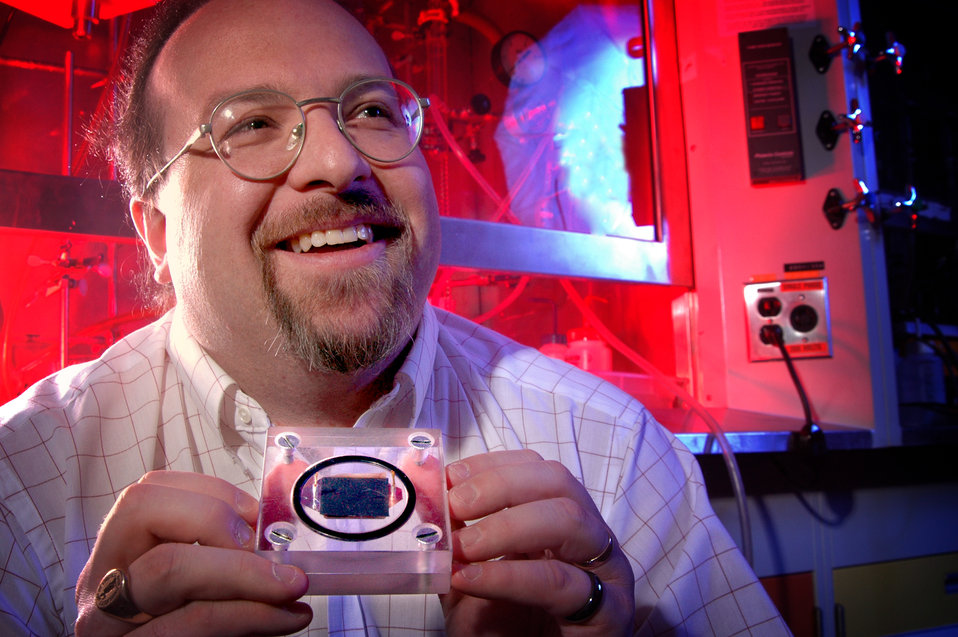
In 2000, Idaho National Laboratory lithium battery solid electrolyte had the distinction of winning both DOE's first Energy @23 and the agency's bright Light award in the same year. The technology was cited for demonstrating the DOE's commitment to save money and improve the quality of life for consumers.